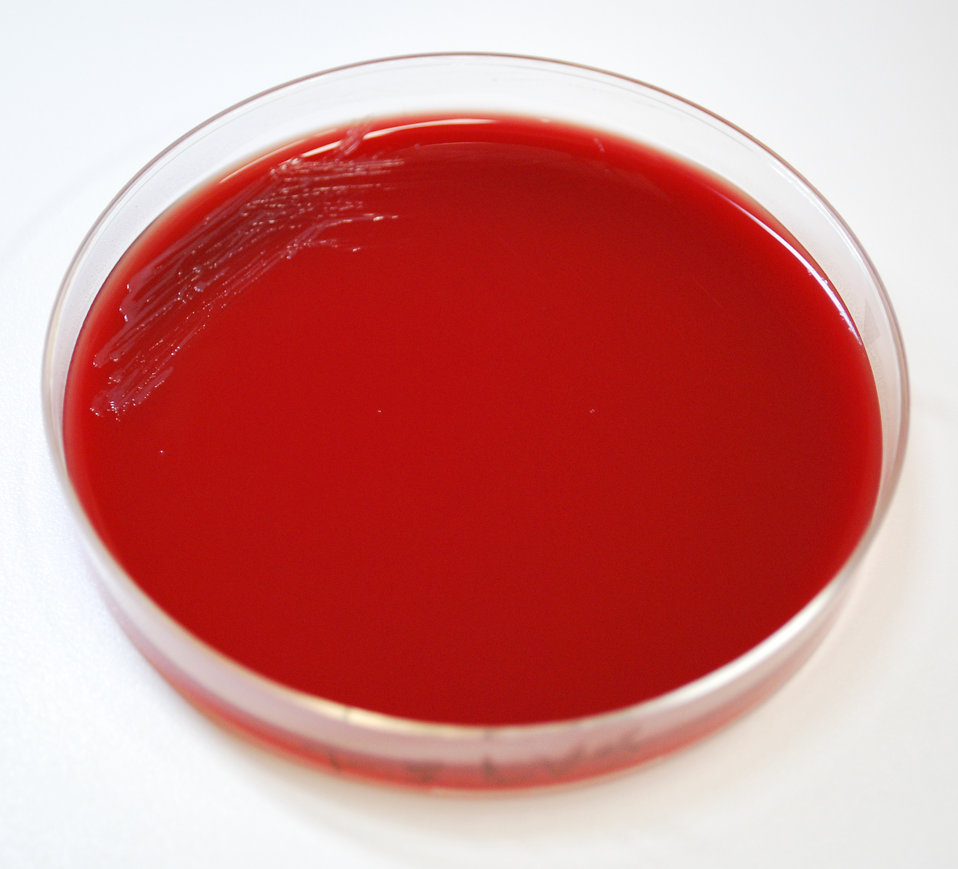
This image depicts a Petri dish containing a sheep's blood agar (SBA) medium, which had been inoculated with Gram-negative Francisella tularensis live vaccine strain (LVS) bacteria. F. tularensis is the pathogen responsible for causing the disease tularemia. This was the appearance of the colonial growth after 24 hours of incubation. What is tularemia?